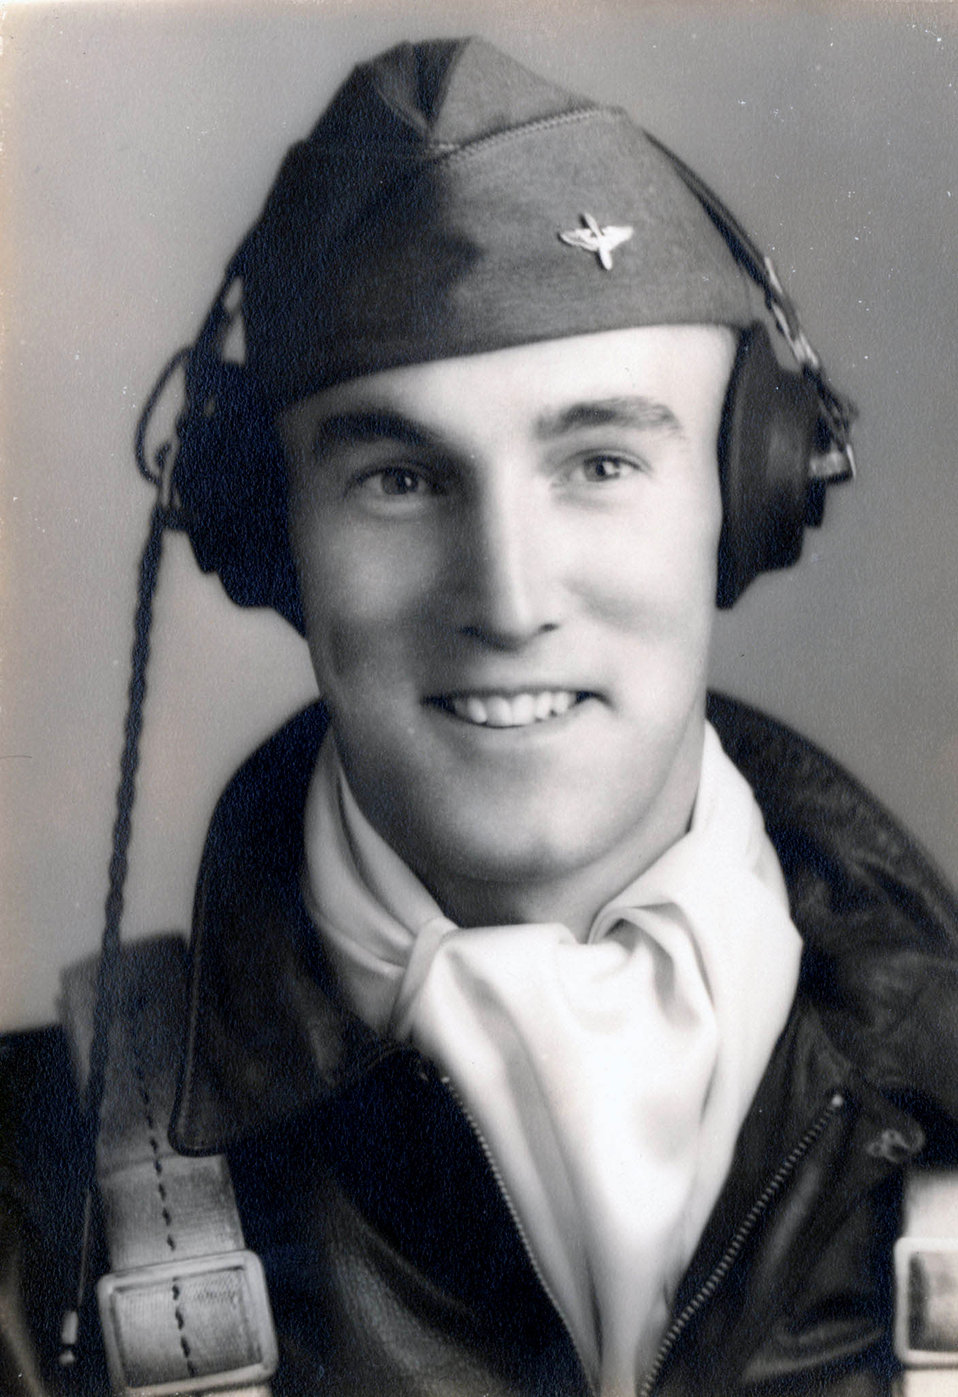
World War II veteran receives Distinguished Flying Cross in Pentagon ceremony

Lt. Claude M Schonberger.